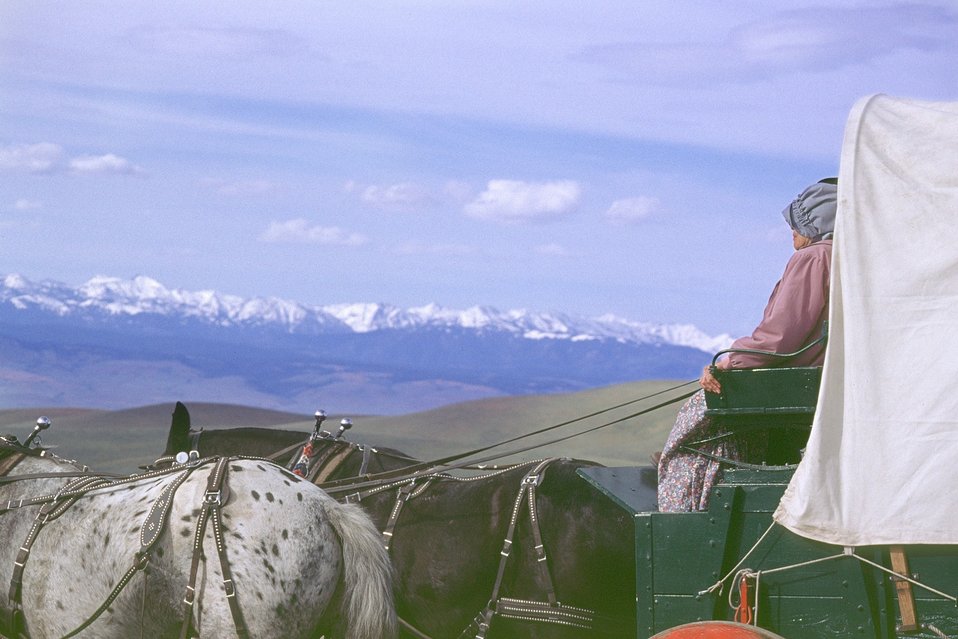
NHOTIC 10th Anniversary. Wagon train reenactment. Profile of woman pioneer with mountains in background.